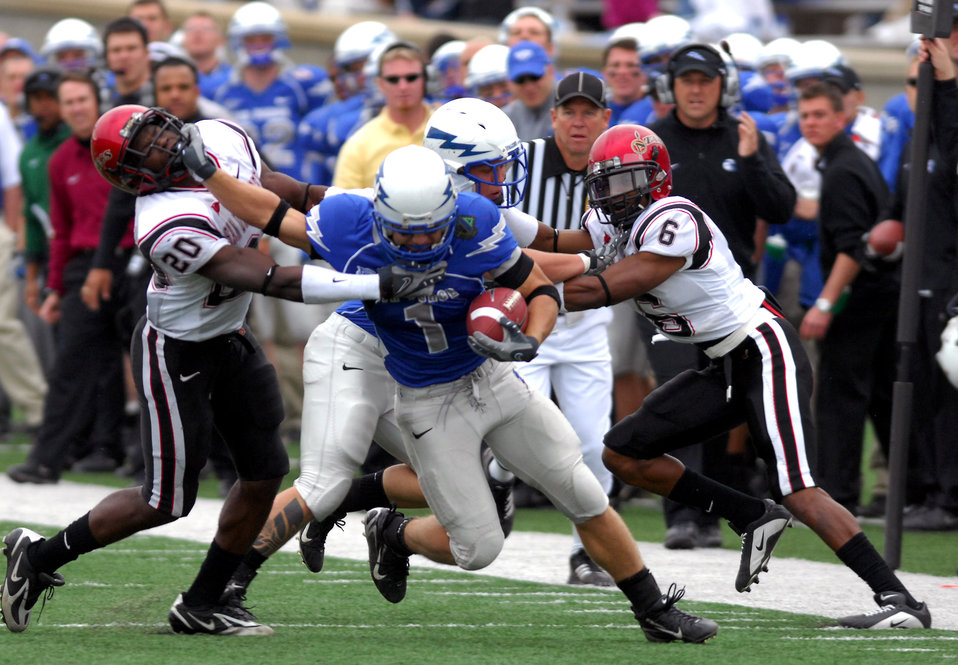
Football: Bowl-bound Falcons dominate regular season finale

Falcon z-back Chad Hall stiff arms San Diego State strong safety Ray Bass during Air Force's 55-23 win over the Aztecs Nov. 17 at Falcon Stadium. Hall gained 271 all-purpose yards, including 151 rushing and two touchdowns.